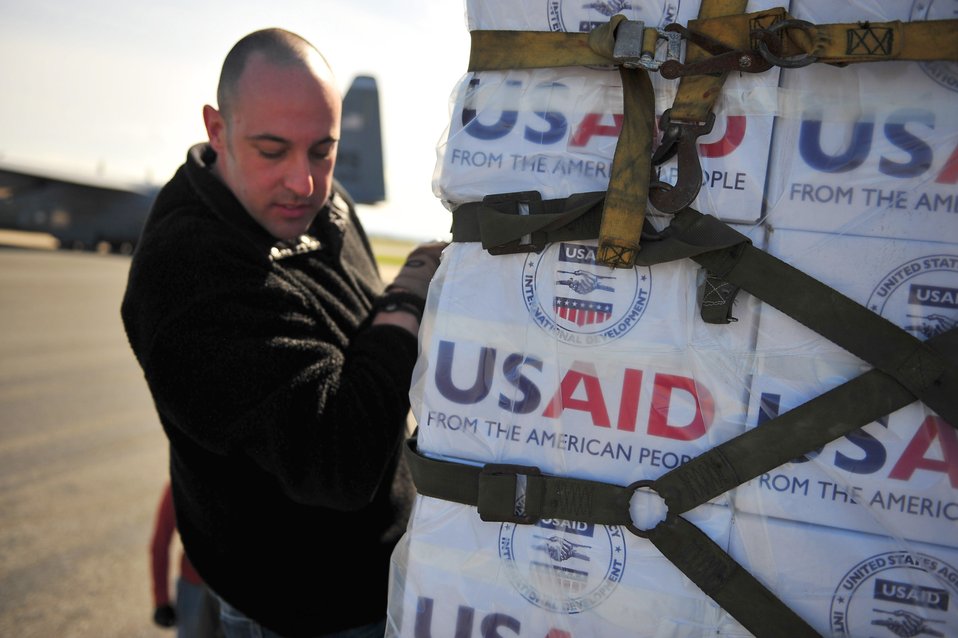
US Aid to Tunisia

Airmen load blankets, tarps and water containers onto a C-130J Super Hercules March 4, 2011, in Pisa, Italy. The aircraft flew the supplies to Tunisia as part of the U.S. government's efforts with the international community to meet the humanitarian needs of the Lybian people and others in the country who fled during political uprisings. The Airmen are assigned to the 435th Air Mobility Squadron at Ramstein Air Base, Germany.